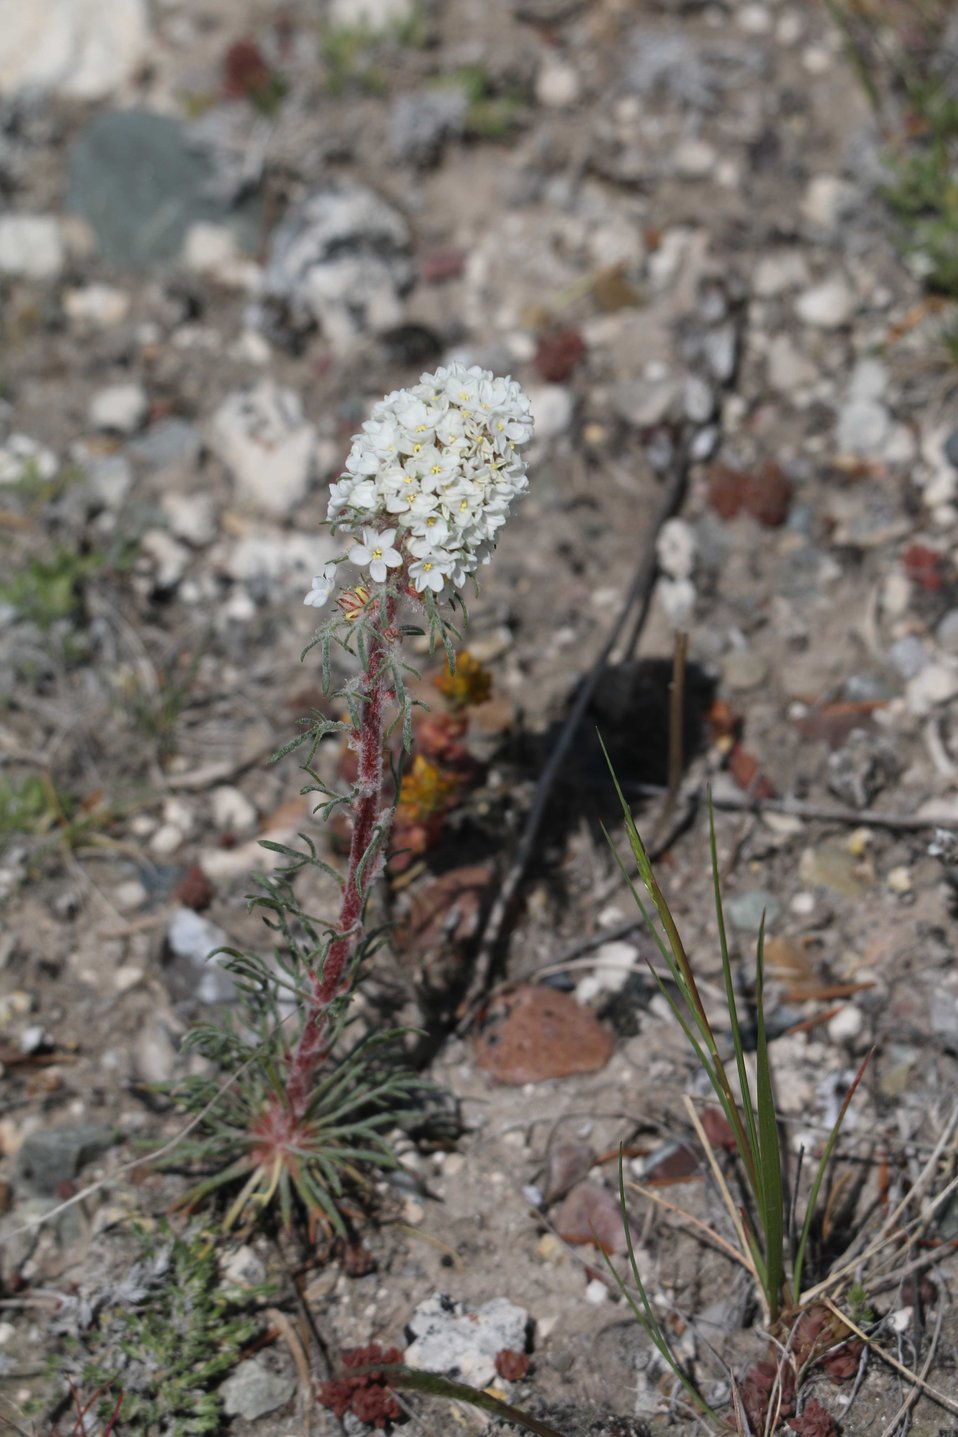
Stumped Us!

The identification of this little guy had us stumped for a while, but we finally learned it's in the Plemonium or Phlox family. It was identified as a Spike Gilia (Ipomoxis spicata) related to the Scarlet Gilia (Ipomopsis aggregata).

Credit: USFWS / Ann Hough, National Elk Refuge volunteer